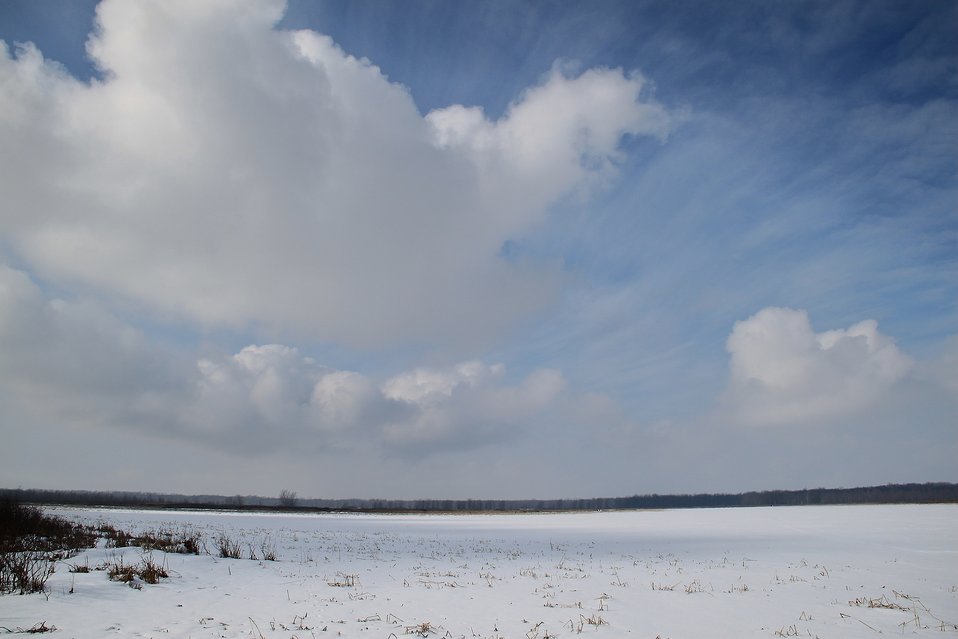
Frozen wetland

Big Marsh Slough-Missisquoi National Wildlife Refuge.